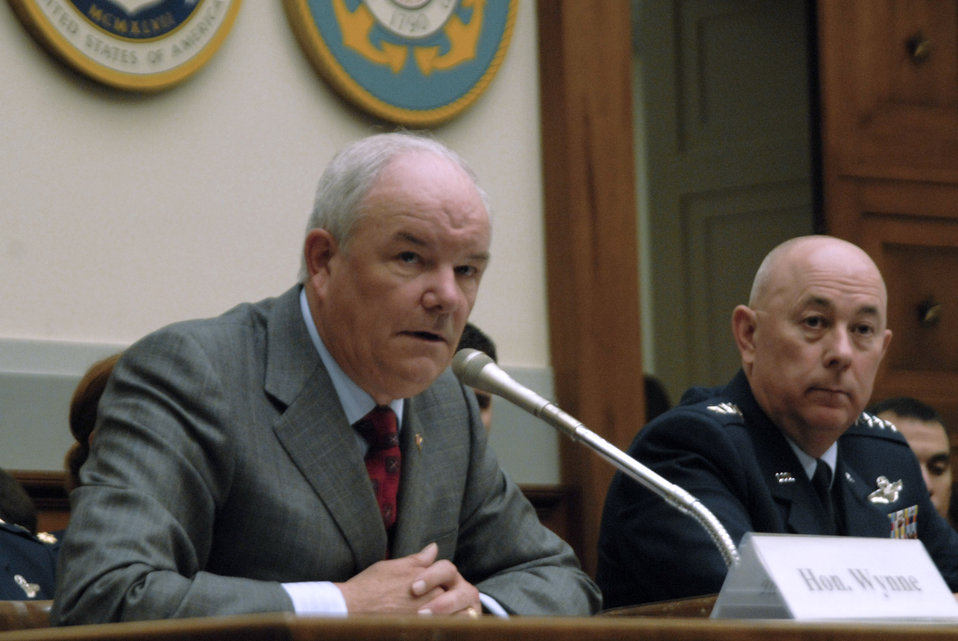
Air Force leaders testify about 2009 budget request

Secretary of the Air Force Michael W. Wynne and Air Force Chief of Staff Gen. T. Michael Moseley answer questions on Capitol Hill Feb. 27 in Washington, D.C. The leaders outlined how the upcoming year's budget will focus on the Air Force's top three priorities: Winning today's fight, taking care of people and preparing for tomorrow's challenges.